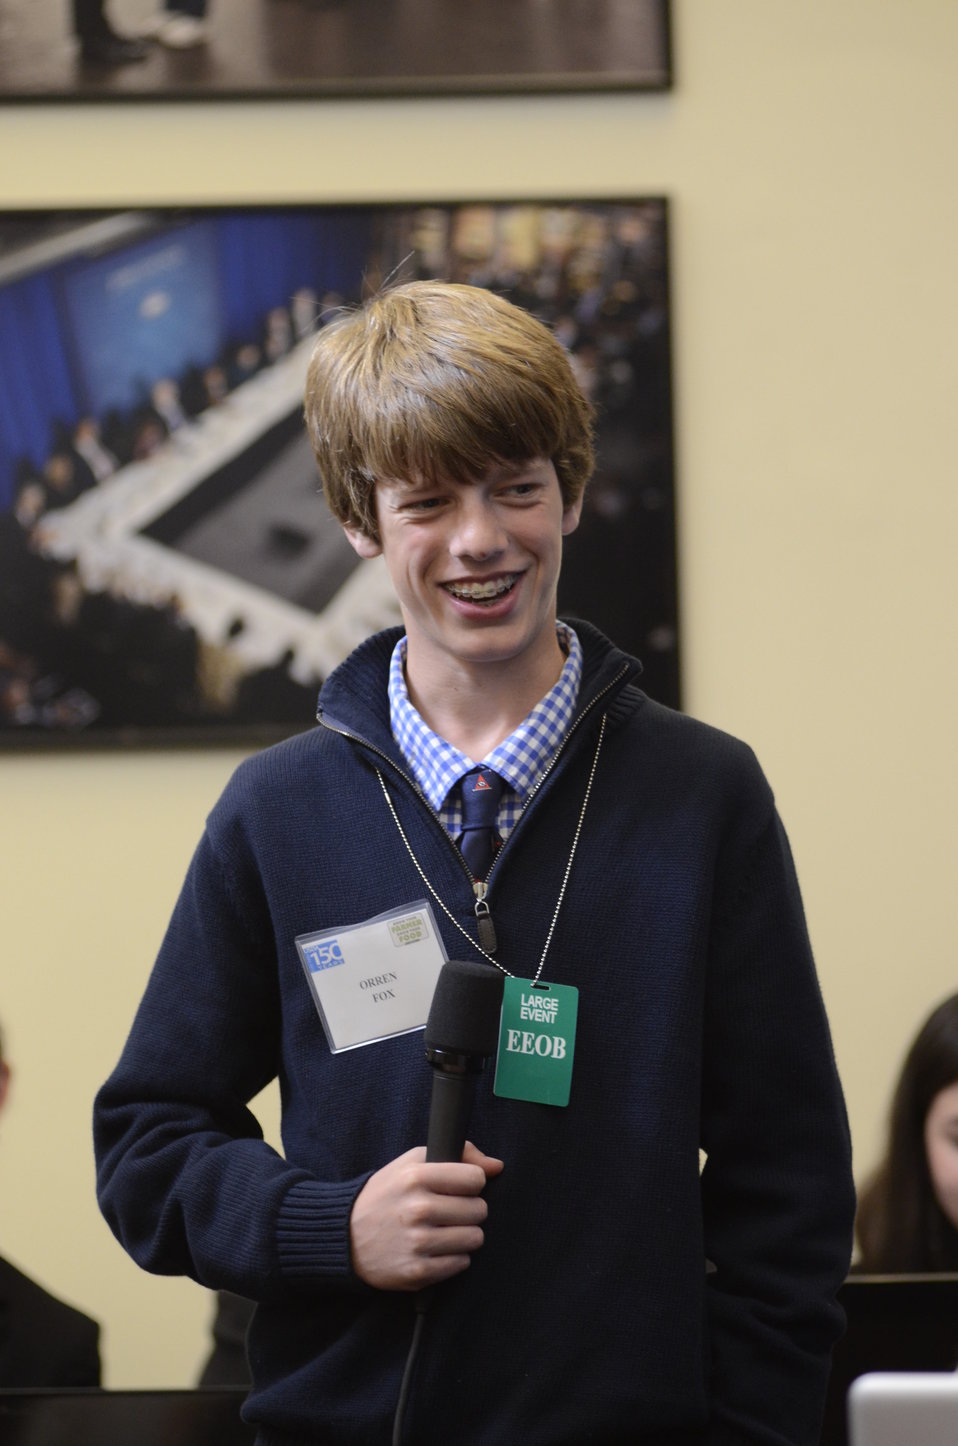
Orren Fox, (aka @happychickens) a teenage chicken/bee keeper, from Boston, talked about learning where his food comes, from raising chickens in his backyard since he was nine. Now he has 32 chickens, 4 ducks and over 200,000 bees. He is the face of Agriculture’s future. He is joined by his father, Henry, during this continuation of a National Conversation on Local and Regional Food projects and how they offer economic opportunities to local farmers, ranchers and food entrepreneurs. The virtual conversation via twitter was from the White House, in Washington, D.C., on Monday, March 5, 2012.